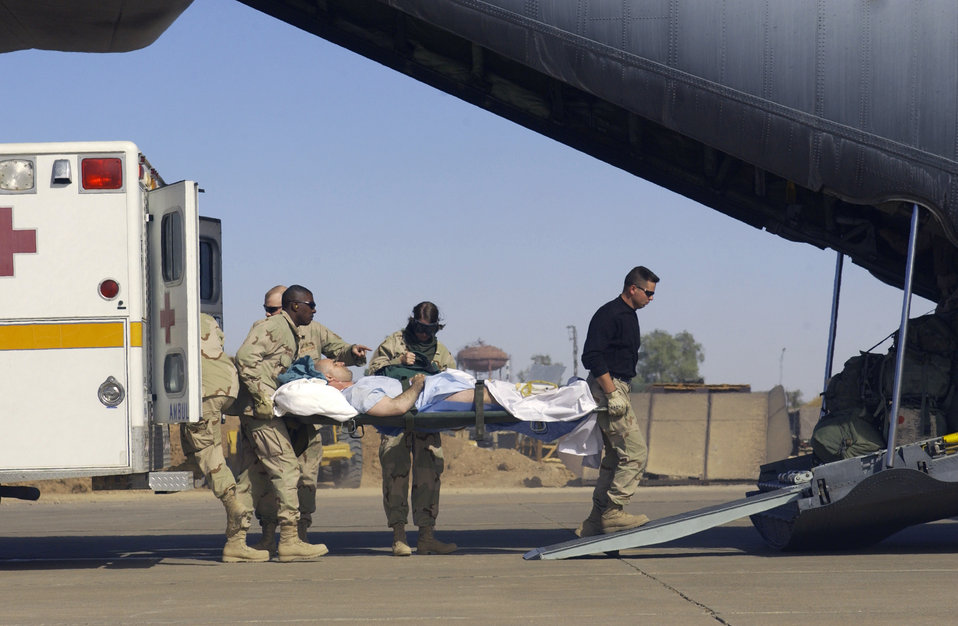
Freedom Pick Up

KIRKUK AIR BASE, Iraq -- Medical personnel from the 506th Air Expeditionary Medical Squadron here load a patient onto a C-130 Hercules for transport to Germany on Oct. 30. The aircraft is assigned to the 379th Aeromedical Evacuation Squadron.